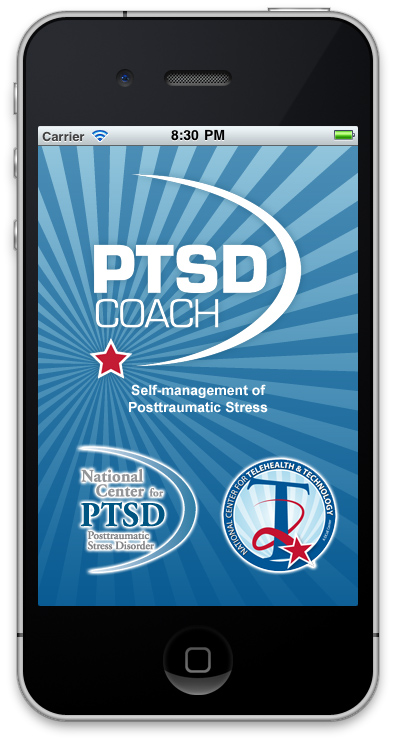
PTSD Coach